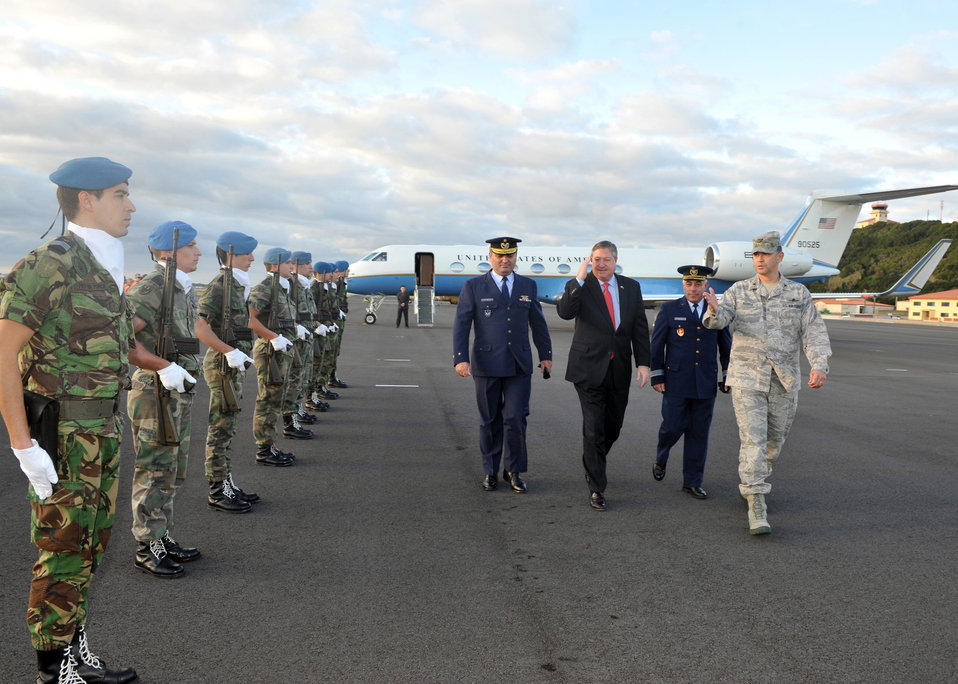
Secretary of the Air Force visits Lajes

Secretary of the Air Force Michael Donley salutes the Portuguese air force honor guard upon his arrival to Lajes Field, accompanied by Maj. Gen. Victor Franciso, Headquarters Azores Air Zone commander, Col. Sergio Ferreira, Air Base No. 4 commander, and Col. Jose Rivera, 65th Air Base Wing commander, Dec. 18, 2011. The Secretary toured several units of the 65th Air Base Wing and spoke with Airmen in all functions and dimensions of the mission at Lajes Field.